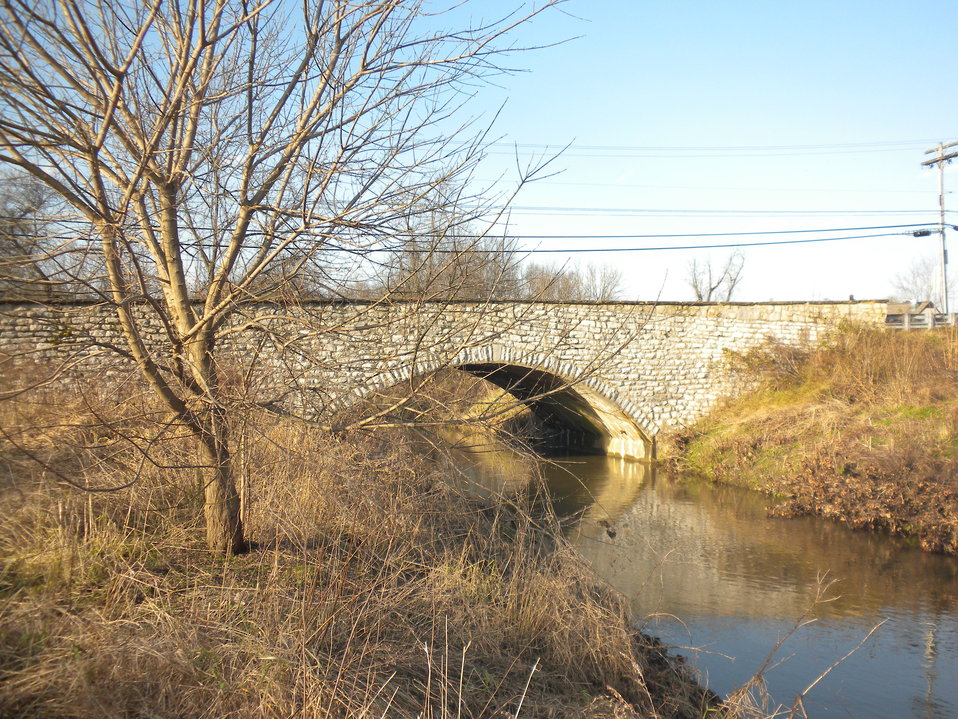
Bridge number 148 in Chester County, PA Built 1911 on NRHP.